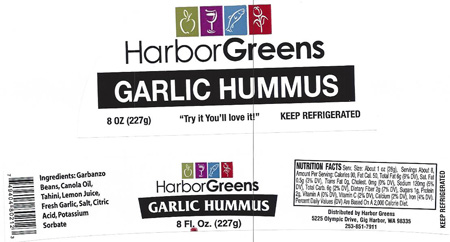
RECALLED – Hummus

July 16, 2013 – Product Recall – Hagee Foods Inc. dba Penny's Salsa Inc. Recalls Hummus Products Because of Possible Health Risk.